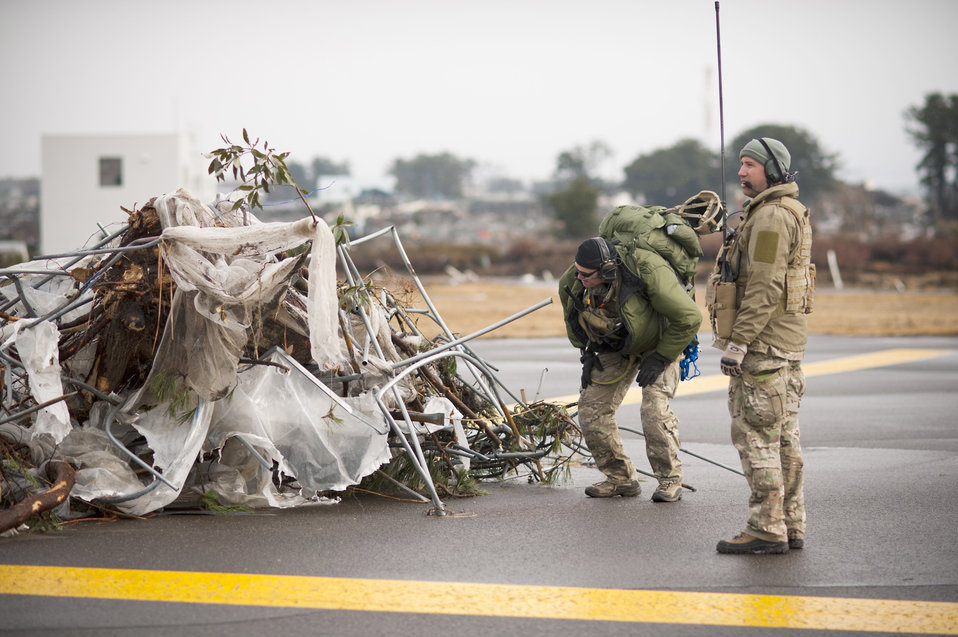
MC-130H Combat Talon II arrives at Sendai Airport

Members of the 320th Special Tactics Squadron assess debris on the runway March 16, 2011, at Sendai Airport, Japan.